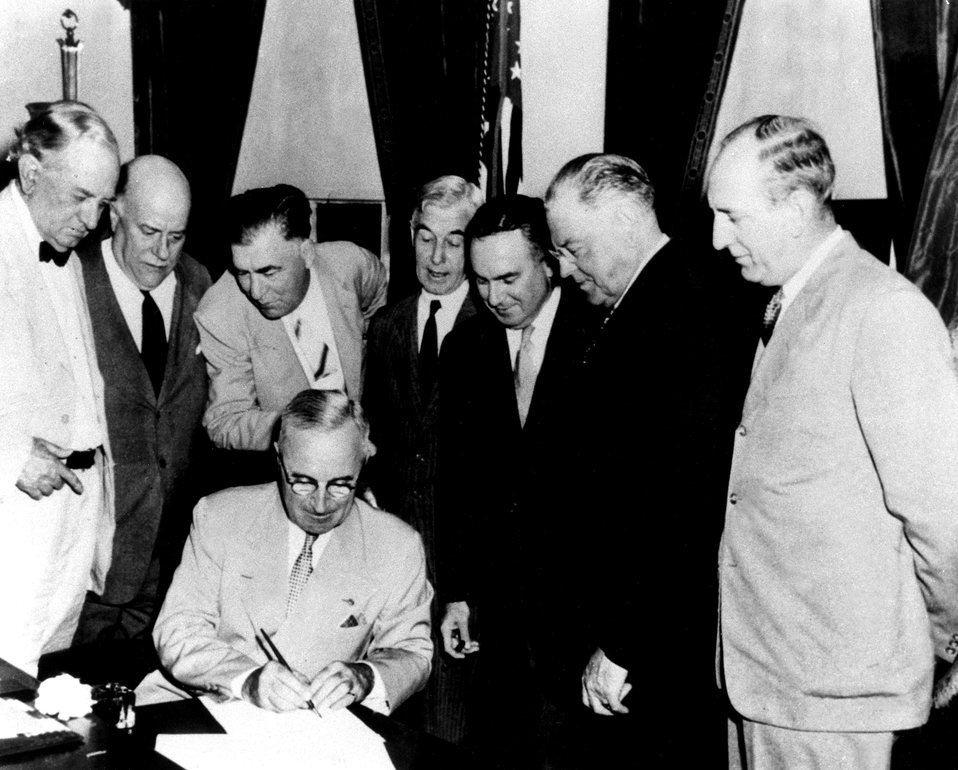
On August 1, 1946, President Harry S Truman signed the bill creating the U.S. Atomic Energy Commission..